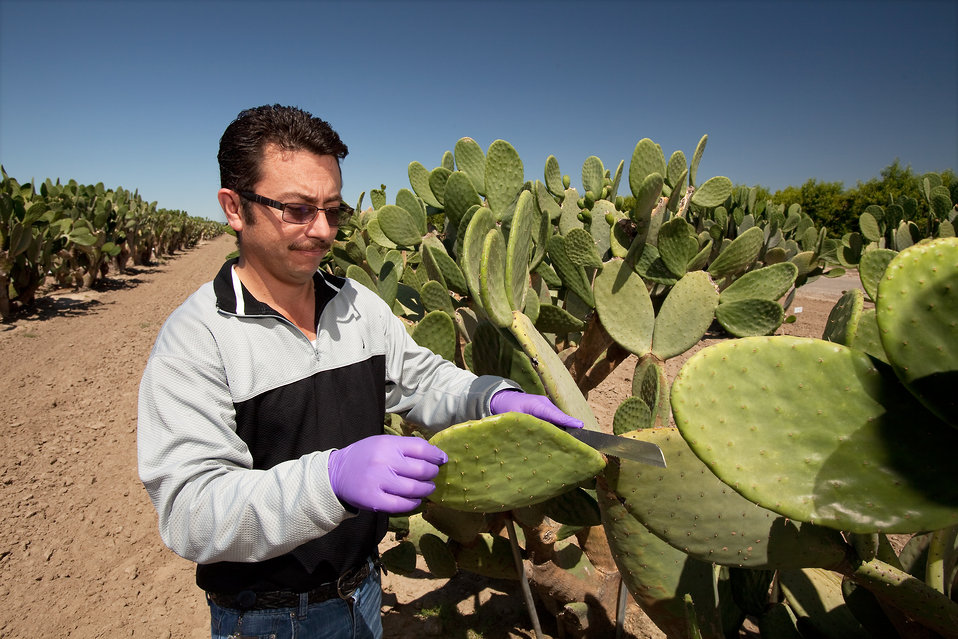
U.S. Department of Agriculture (USDA) Agriculture Research Service (ARS) technician Irvin Arroyo cuts a cladode from a prickly pear cactus at the San Joaquin Valley Agricultural Sciences Center in Parlier, CA on June 22, 2011.